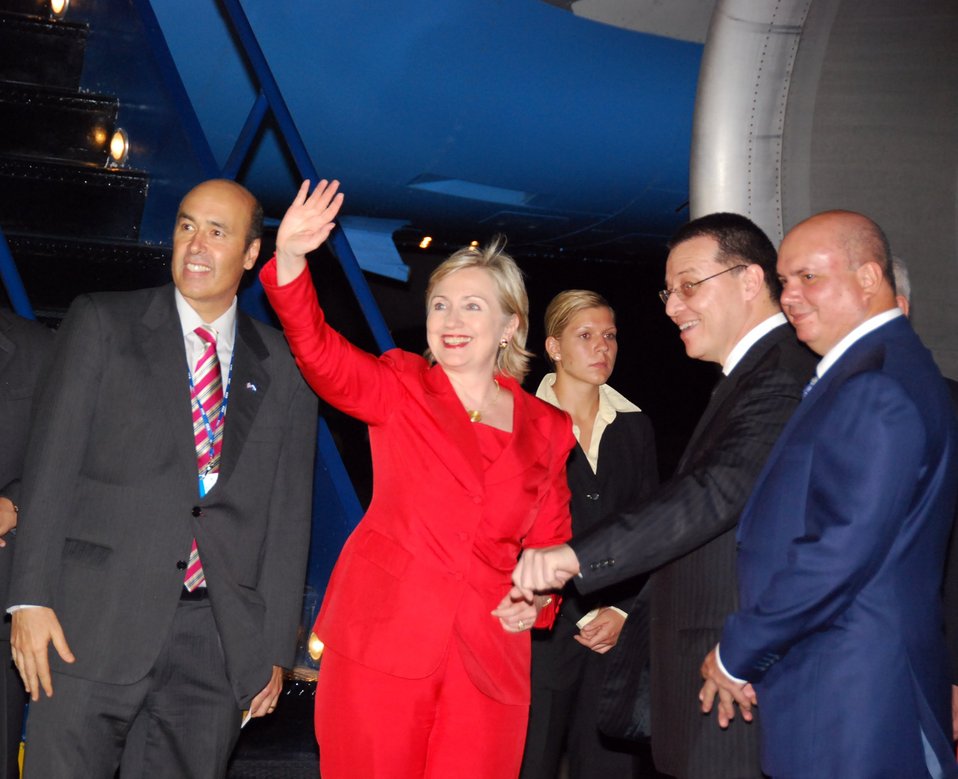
Secretary Clinton Arrives in Honduras

U.S. Secretary of State Hillary Rodham Clinton waves to the crowd during her arrival at Armando Escalon Airbase in San Pedro Sula, Honduras, June 1, 2009. From left to right: Ambassador Hugo Llorens, Secretary Clinton, Commissioner Vicepresident Aristides Mejia, and San Pedro Sula Major Rodolfo Padilla Sunseri.